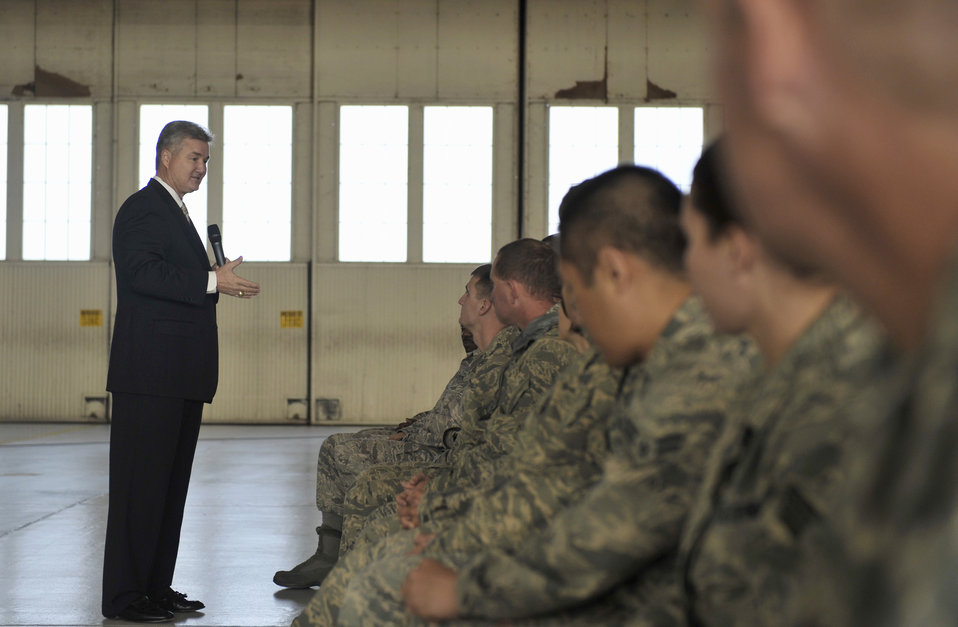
14th CMSAF mentors Moody Airmen

Retired Chief Master Sgt. of the Air Force Gerald Murray talks to Airmen during a chief's call Dec. 2, 2010, at Moody Air Force Base, Ga. After the speech, Chief Murray answered questions from the crowd pertaining to changes or concerns they may have about the Air Force.